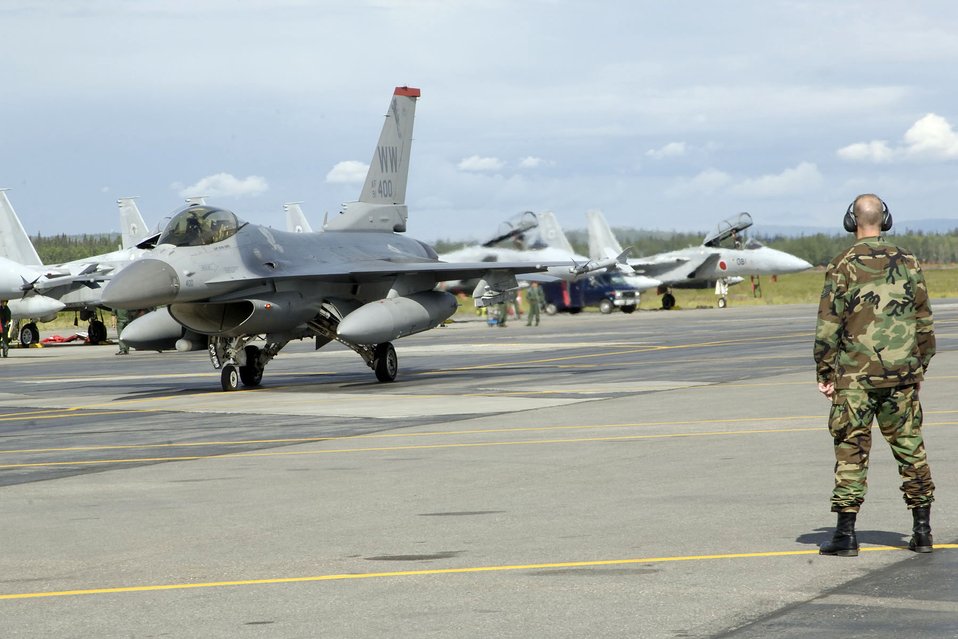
Misawa F-16 unit flying high at Cooperative Cope Thunder

An Airman watches as an F-16 Fighting Falcon taxis past F-15s from the Japan Air Self Defense Force at Eielson Air Force Base, Alaska, on July 19. The F-16 was launching on a familiarization flight of Alaskan air space before the kick off of Cooperative Cope Thunder 06-3.